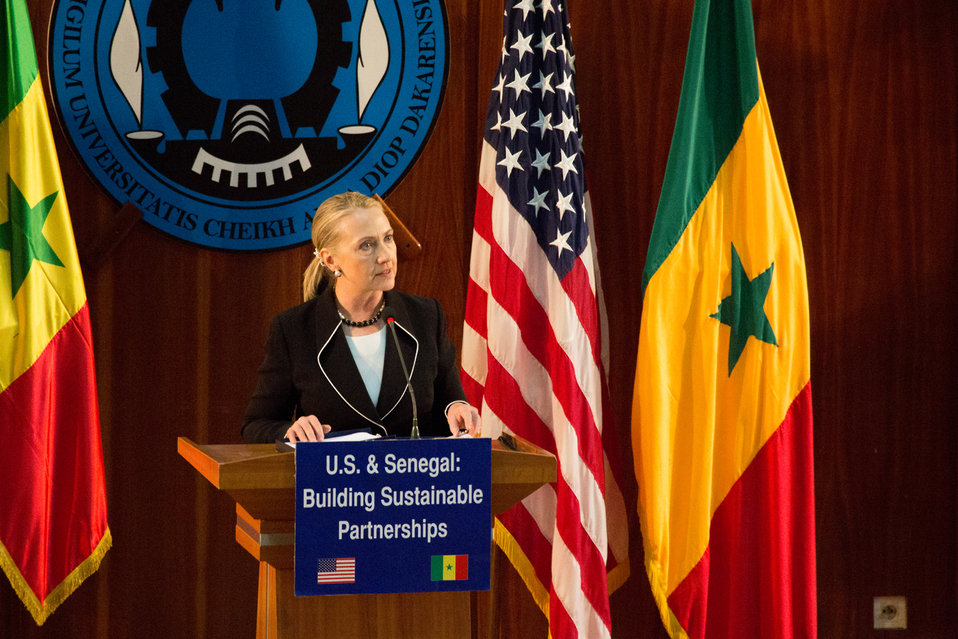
Secretary Clinton Delivers Remarks on U.S. and Senegal: Building Sustainable Partnerships

U.S. Secretary of State Hillary Rodham Clinton delivers remarks on the U.S. and Senegal: Building Sustainable Partnerships in Dakar, Senegal, on August 1, 2012.